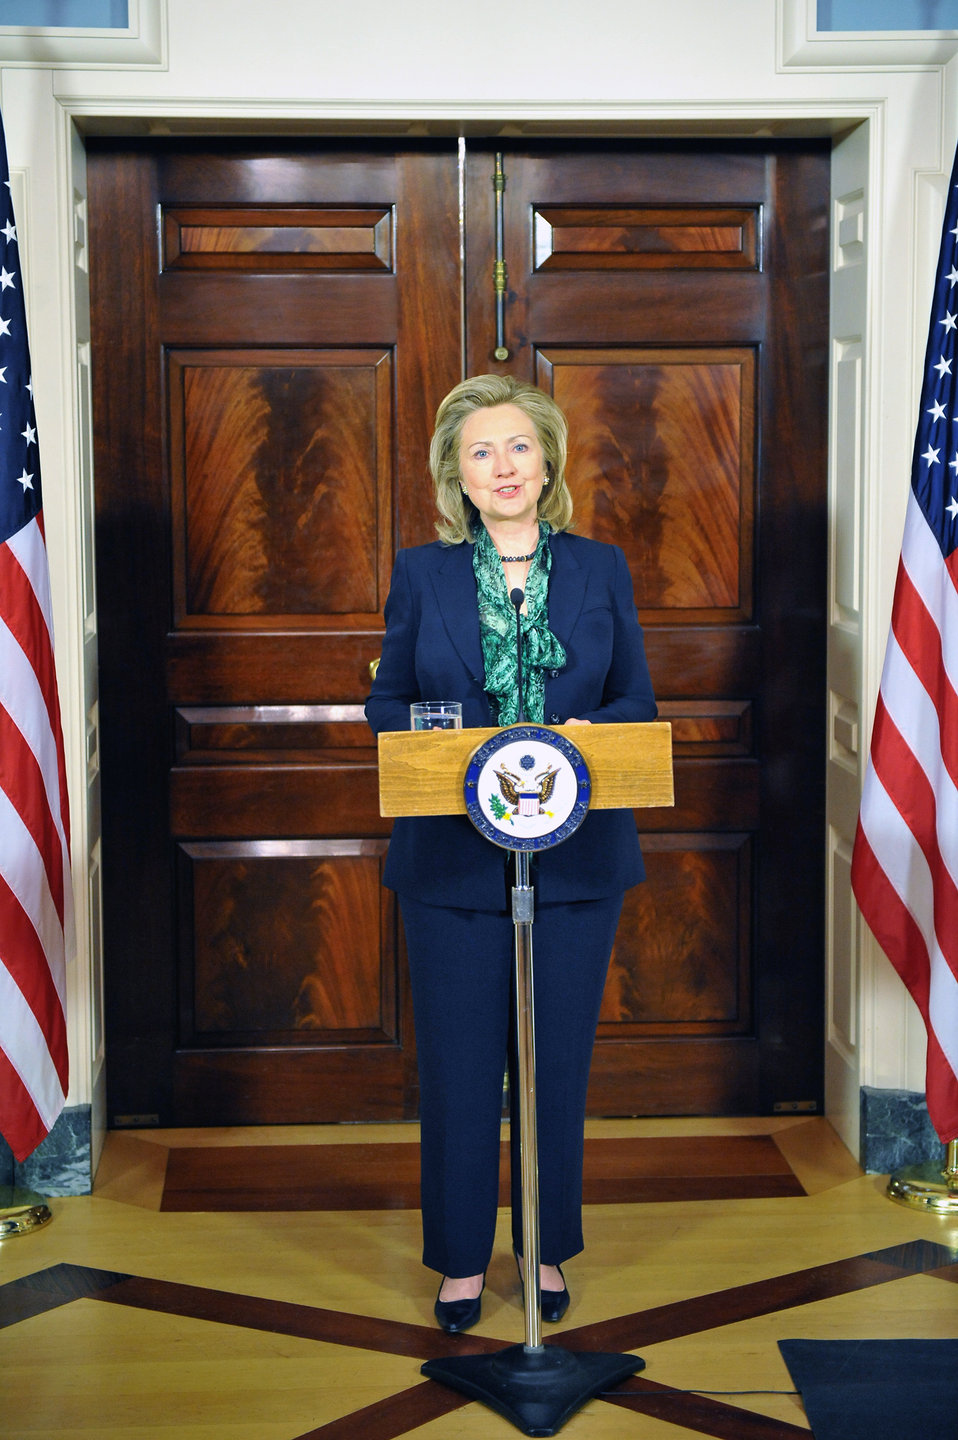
Secretary Clinton Delivers Remarks on the Death of Osama bin Laden

U.S. Secretary of State Hillary Rodham Clinton delivers remarks on the death of Osama bin Laden, at the U.S. Department of State in Washington, D.C., on May 2, 2011.